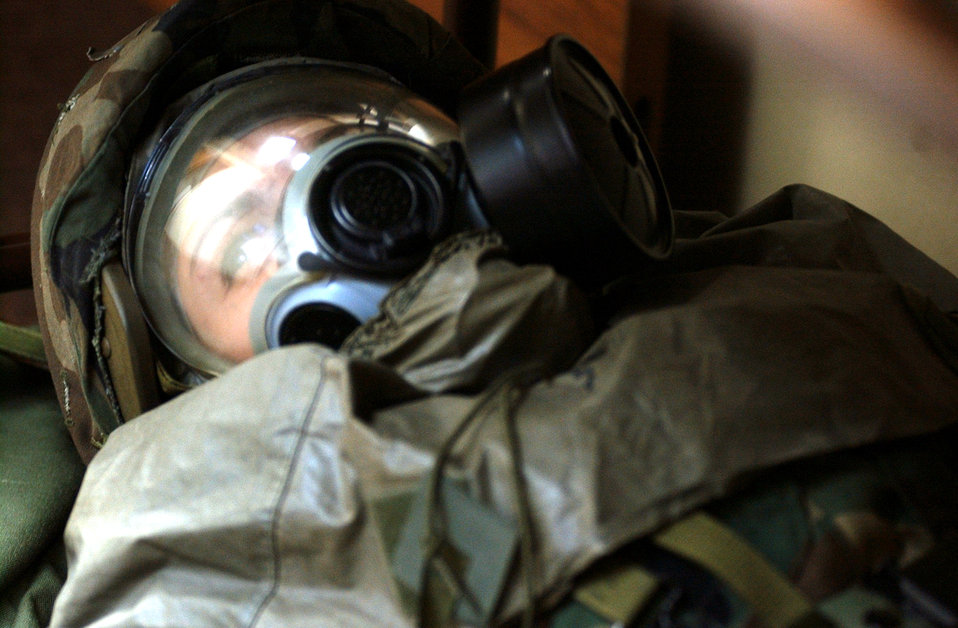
All geared up

FAIRCHILD AIR FORCE BASE, Wash. -- Senior Airman Stacy Wiley takes cover during a mock mortar attack here July 10. During the simulated attack, Airmen scrambled into their chemical warfare gear to guard against possible chemical contamination. The goal of the exercises was to mimic real-world wartime environments to prepare Airmen to fight under any condition. Airman Wiley is a paralegal with the 92nd Air Refueling Wing's legal office.